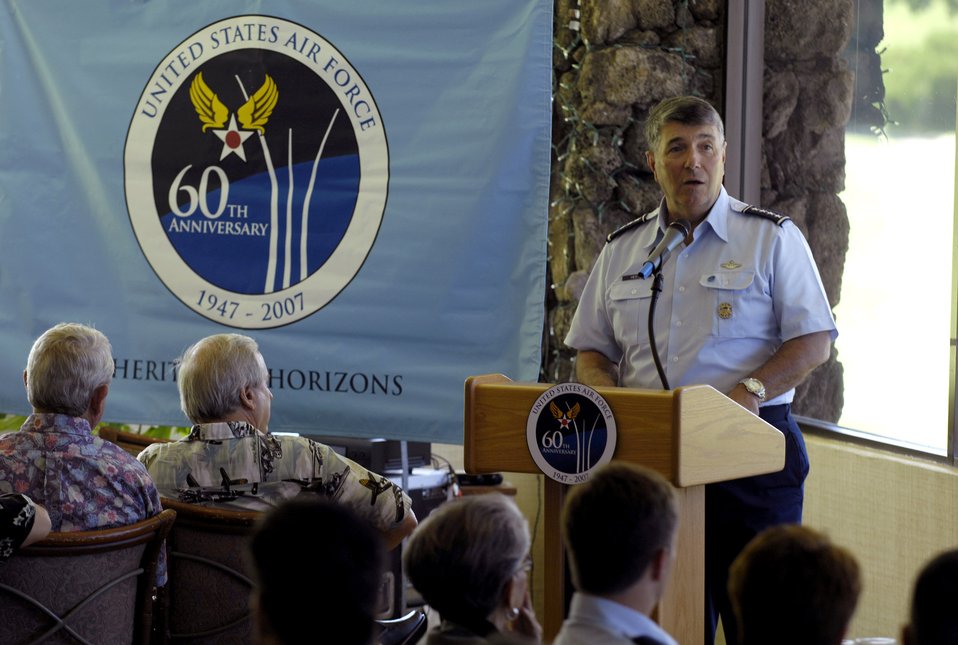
Hickam 'rolls out' Air Force Week Honolulu

Gen. Paul V. Hester, the Pacific Air Forces commander, speaks to the Air Force Civilian Advisory Council during a luncheon June 19 in Honolulu. Gen. Hester speaks to the AFCAC about the roll out of Air Force Week Honolulu to be held Sept. 7-15. Air Force Week celebrations are designed to inform and educate the public about the important roles the Air Force plays in support of the nation's defense.